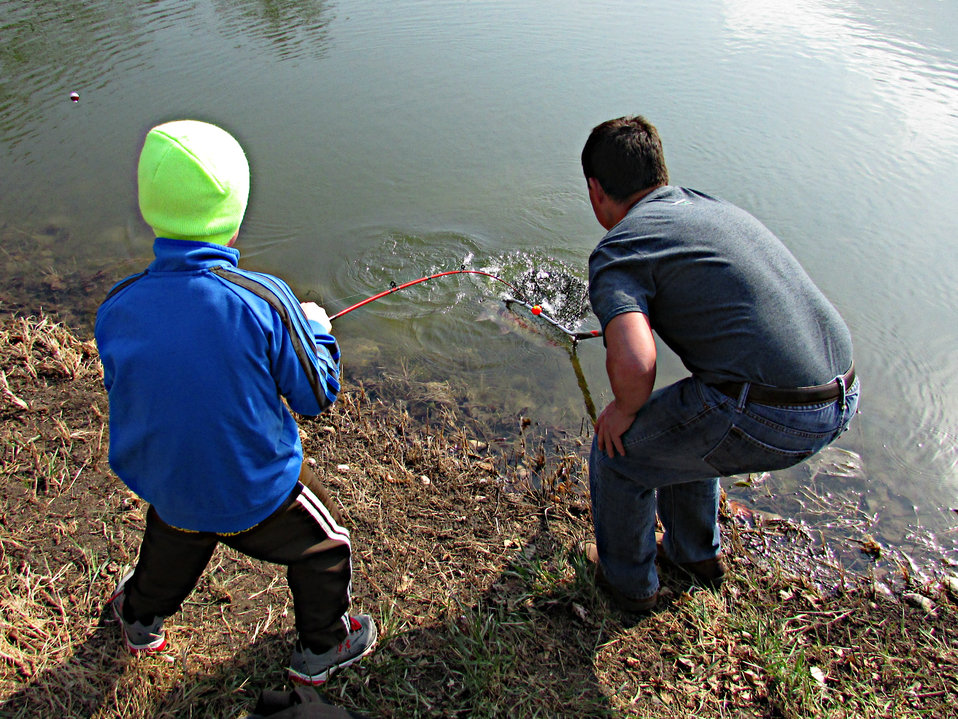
'Net it!'

Hauling in some of these fish was a two-man operation.